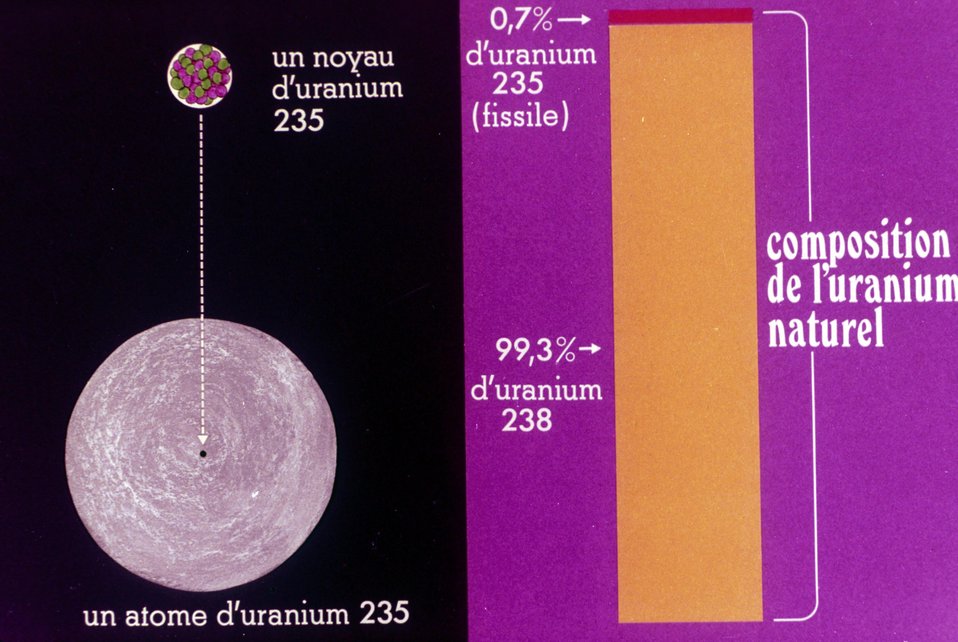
L'Uranium et ses isotopes.